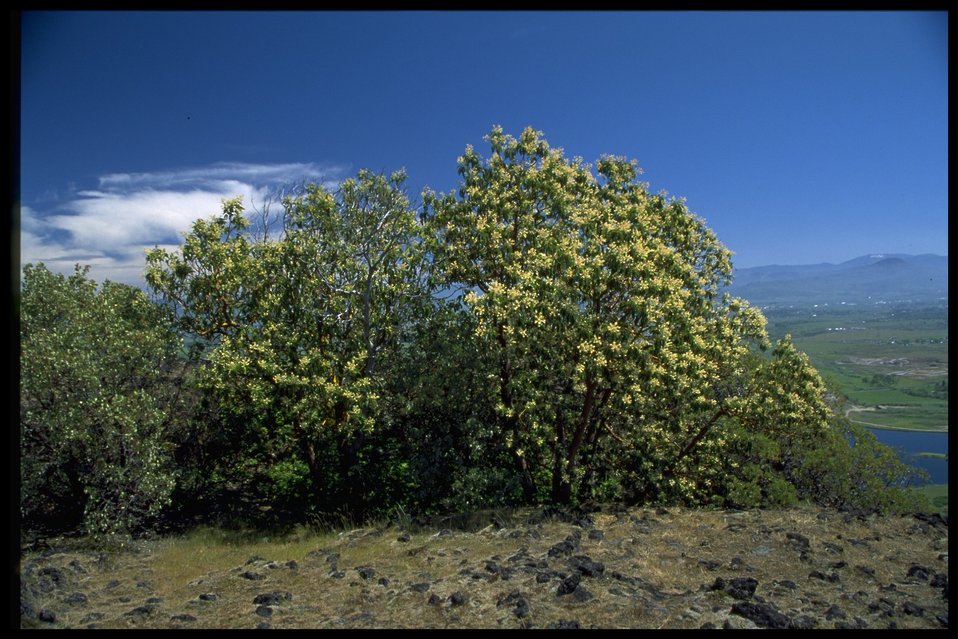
Farshot of Madrone, Arbutus menziesii.